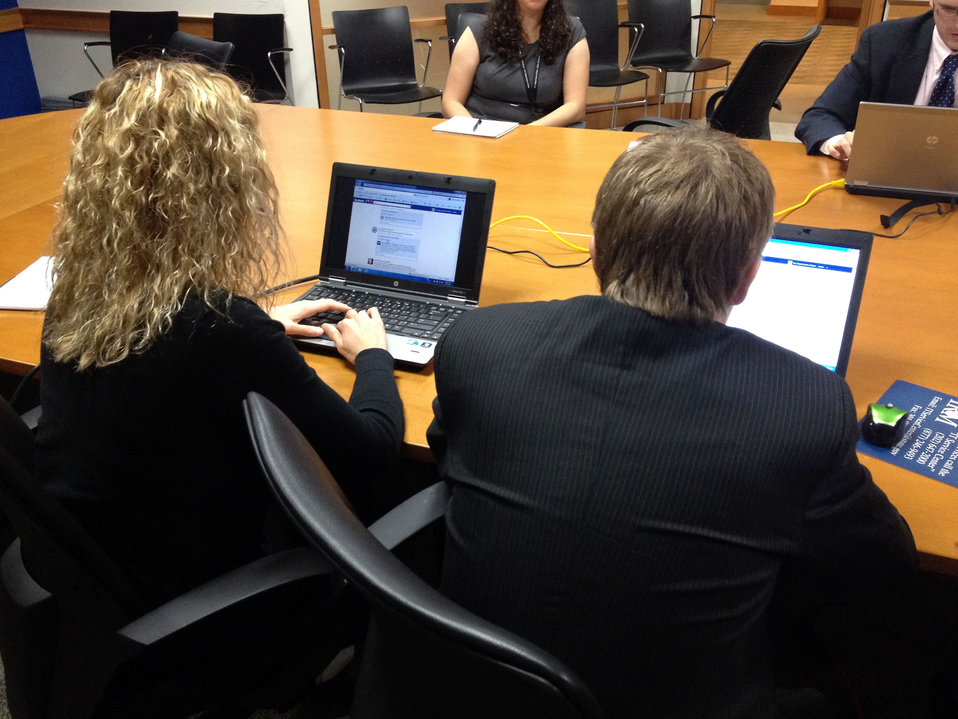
Ronan Farrow Responds to Your Questions on Facebook

Special Adviser for Global Youth Issues Ronan Farrow, right, responds to questions live in a Facebook chat on May 17, 2012.